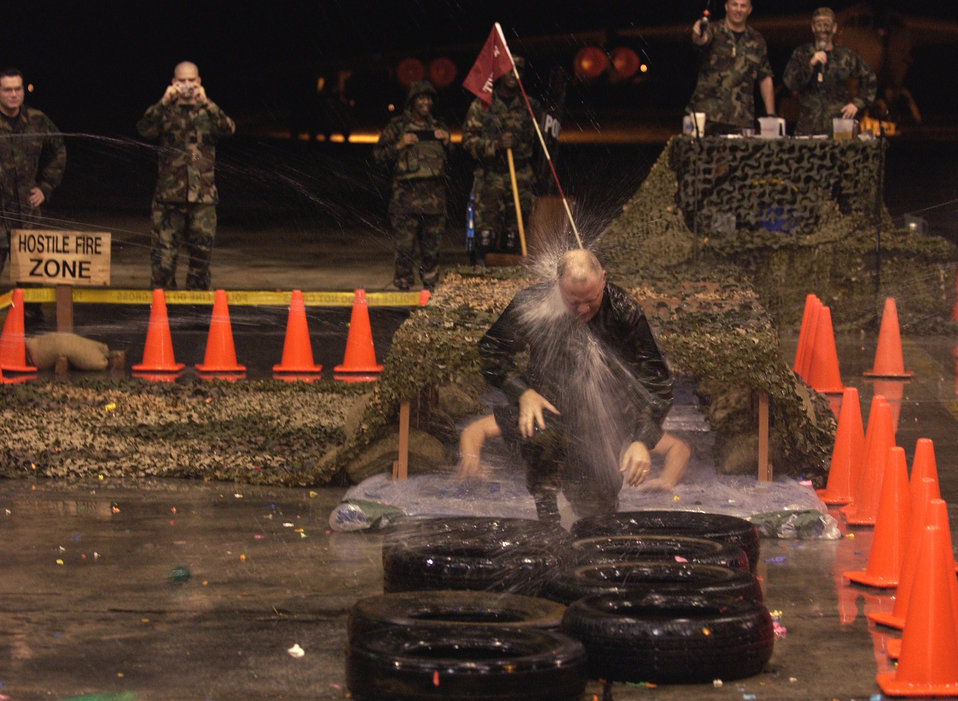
Entering the danger zone

ANDERSEN AIR FORCE BASE, Guam -- Command Chief Master Sergeant Donald W. Hatcher of 13th Air Force and the 36 Air Expeditionary Wing, takes his turn at the obstacle course during the first Enlisted Combat Dining In here Jan. 29. The event celebrated more than 50 years of enlisted heritage on Andersen AFB.